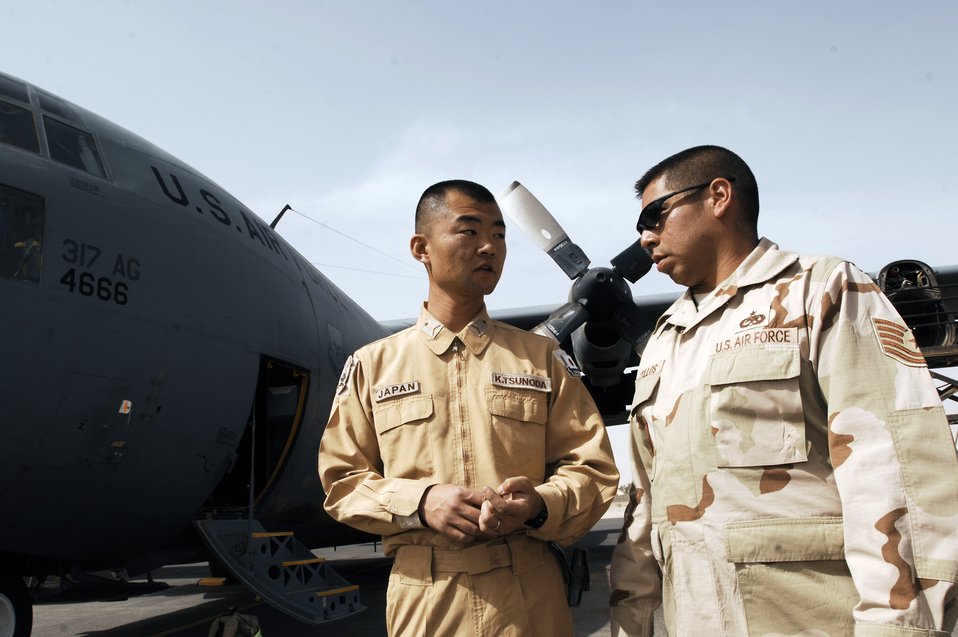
Coalition maintainers keep C-130 in the fight

Japanese Staff Sgt. Kouichi Tsunoda (left) and Tech. Sgt. Porfirio Bustillos speak with each other before performing an inspection on an C-130 Hercules March 21 at a Southwest Asian air base. Airmen from the U.S., Japanese Air Self-Defense Force and South Korean air force's 58th Airlift Wing participated in a coalition maintenance exchange program allowing maintainers to sharpen their skills, exchange ideas, and promote closer relations among coalition air forces supporting the war on terrorism. Sergeant Tsunoda is a maintainer from the Japan Air Self-Defense Force Iraq Reconstruction Support Airlift Wing, and Sergeant Bustillos is a maintainer deployed to the 386th Expeditionary Aircraft Maintenance Squadron.